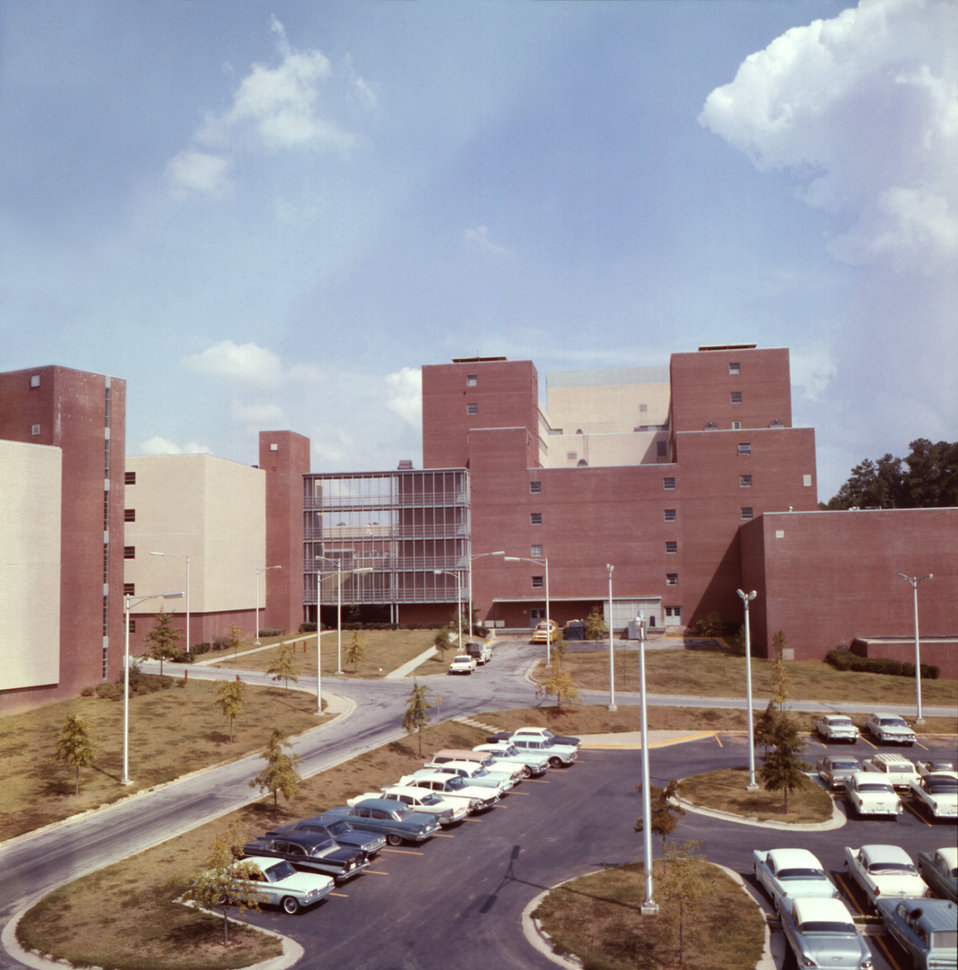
This historic 1963 view depicts the back of what was once the Centers for Disease Control and Prevention's (CDC), physical plan located on Clifton Road, in Atlanta, Georgia. At the time of this photograph, a number of additional structures had yet to be added to the rear of the organization's physical plan.